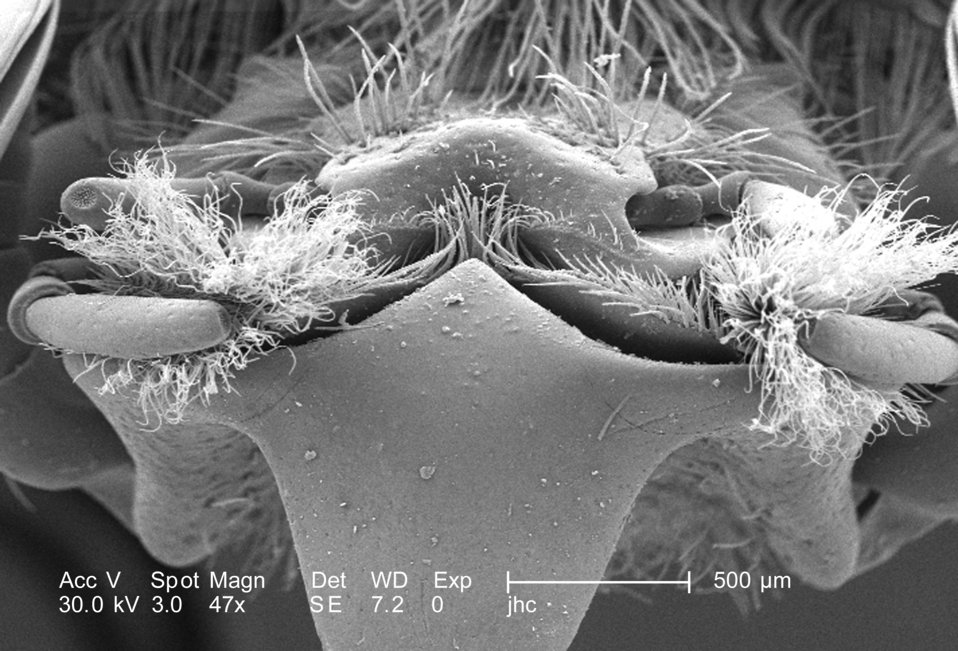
At a low magnification of only 47X, i.e., twice that of PHIL 9928, this scanning electron micrograph (SEM) depicted some of the morphologic exoskeletal features located on the head region of an adult 'figeater' beetle, Cotinis mutabilis. Sometimes referred to as a 'junebug, this insect is a member of the taxonomic family, Scarabaeidae, or dung beetles. In this particular image structures associated with the mouth are visible including the labrum, mandibles, maxillae and labium. This beetle was found in the Decatur, Georgia suburbs.